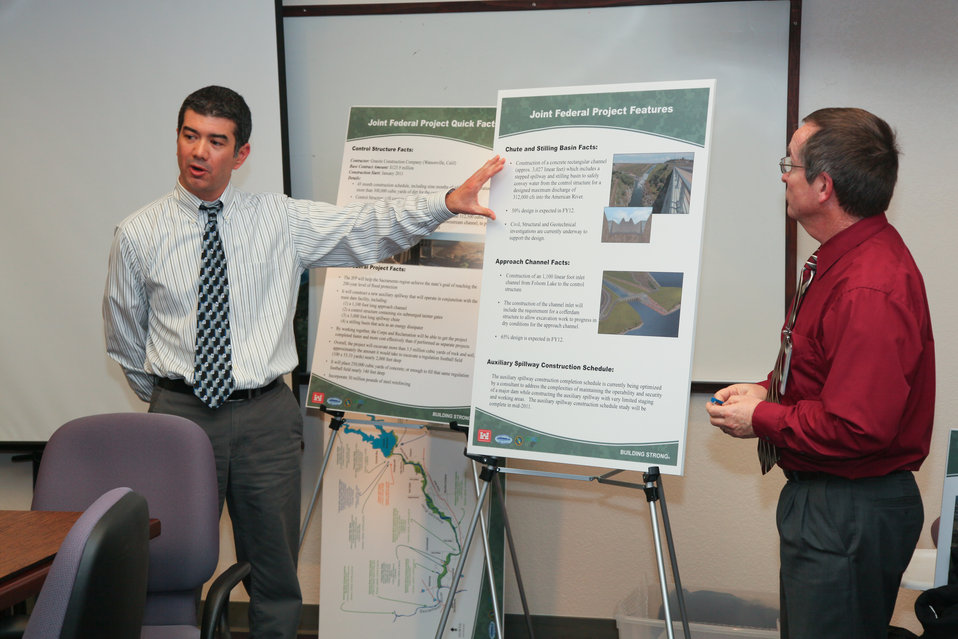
Corps provides tour of Folsom Dam Joint Federal Project to Congresswoman Matsui

FOLSOM, Calif. (Feb. 4, 2011) - Civil works project manager Jason Magness (left) and project management team member Roger Henderson, both with the U.S. Army Corps of Engineers Sacramento District, explain the construction of the auxiliary spillway at Folsom Dam to U.S. Rep. Doris O. Matsui here Feb. 3.